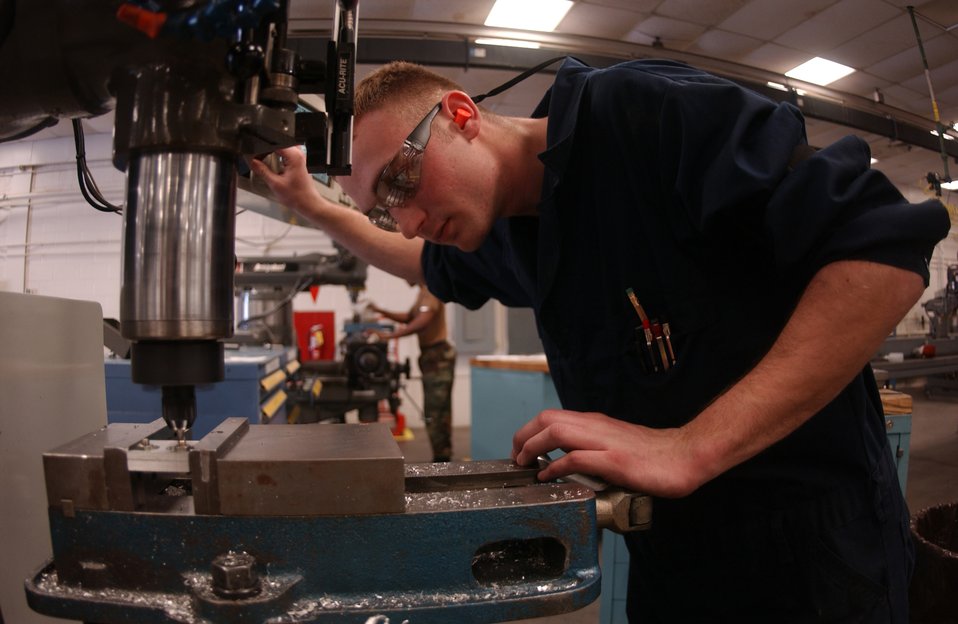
Getting it right

LUKE AIR FORCE BASE, Ariz. -- Airman 1st Class Eric Lundeen machines a shim to be used on aircraft here Jan. 20. Airman Lundeen is a metal technician apprentice with the 56th Equipment Maintenance Squadron.